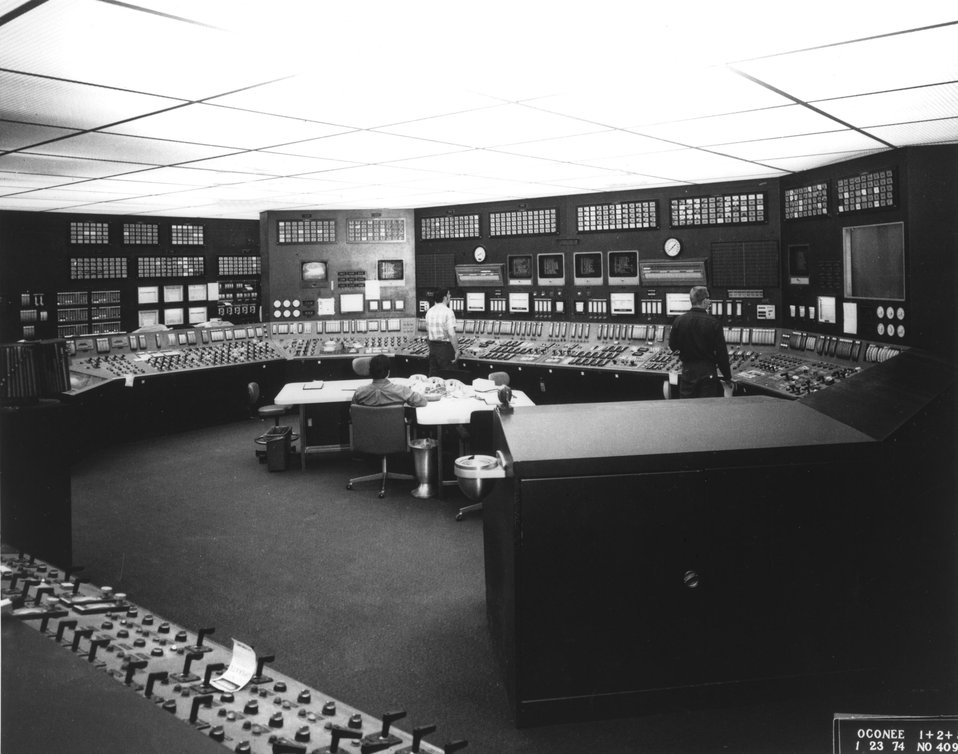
View of the control room for Duke Power Company's Oconee Nuclear Station at Seneca, South Carolina. Circa 1974.